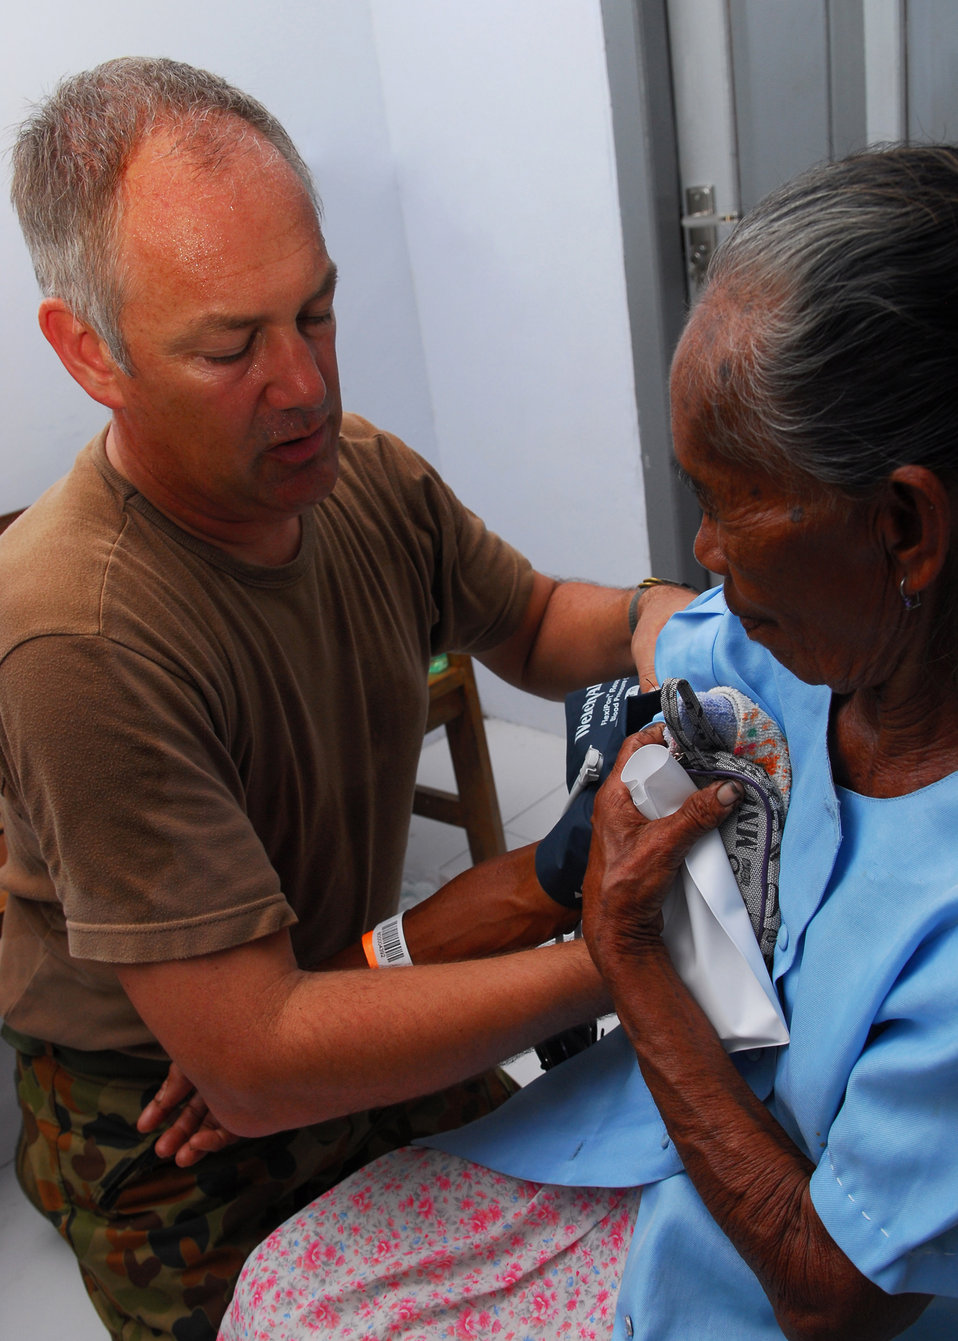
Australian Air Force Squadron Leader David Cooksley checks a patient’s blood pressure during a medical civic action program in Sofifi, Indonesia, on July 20, 2010. Mercy is in the North Maluku Islands conducting Pacific Partnership 2010, the fifth in a series of annual U.S. Pacific Fleet endeavors conducted in Indonesia as a disaster relief exercise aimed at strengthening regional partnerships.